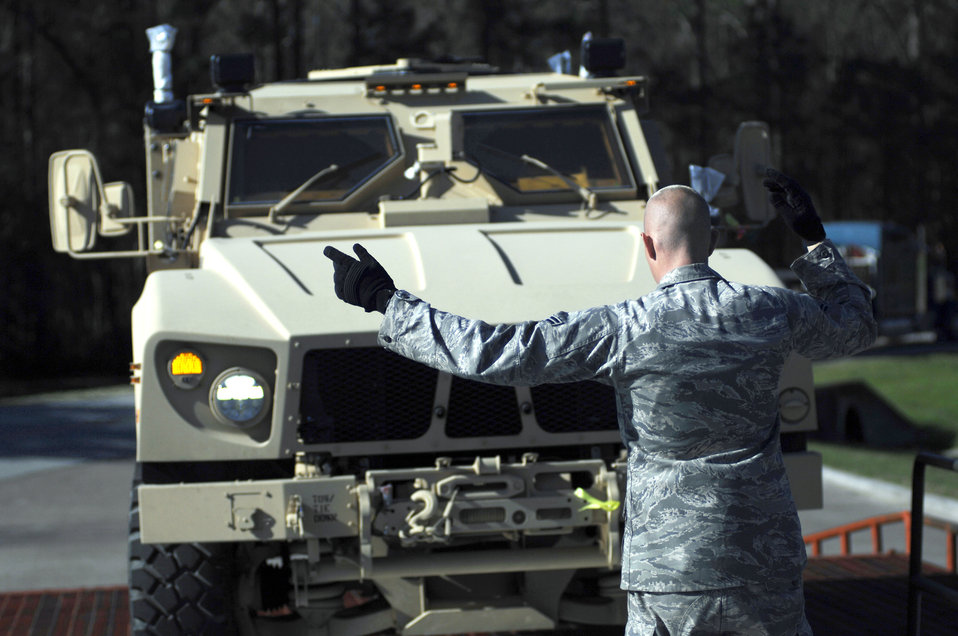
Charleston officials support Operation Enduring Freedom build up

Airman 1st Class Koy Sauer directs the driver of a mine-resistant, ambush-protected all-terrain vehicle onto pallets March 23, 2010, at Joint Base Charleston, S.C. Airman Sauer is an air transportation technician with the 437th Aerial Port Squadron.